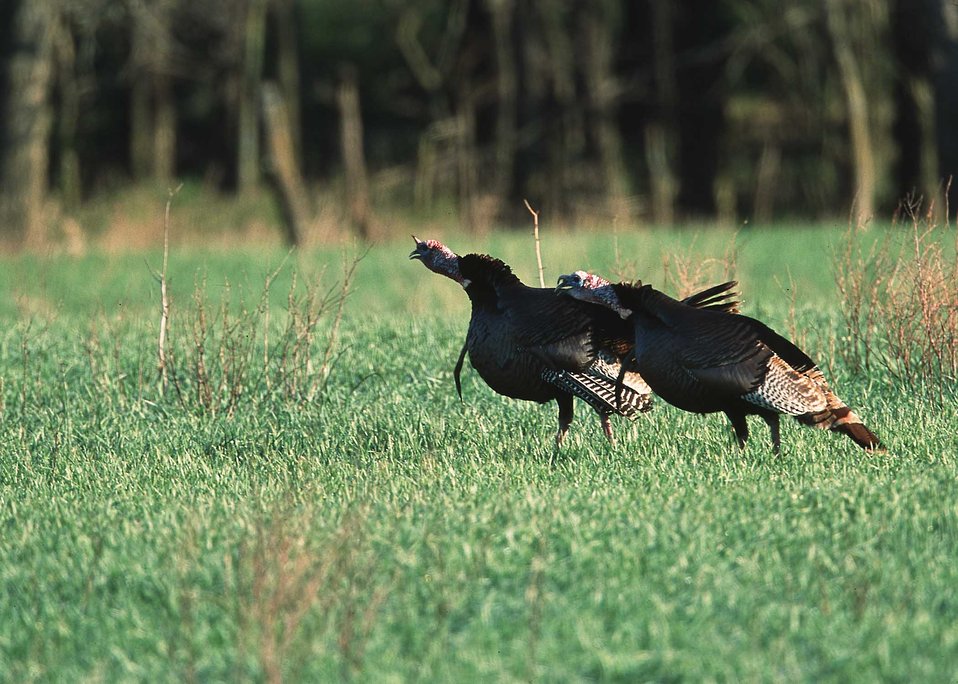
Wild turkeys in farm field near Manhattan, Kansas.